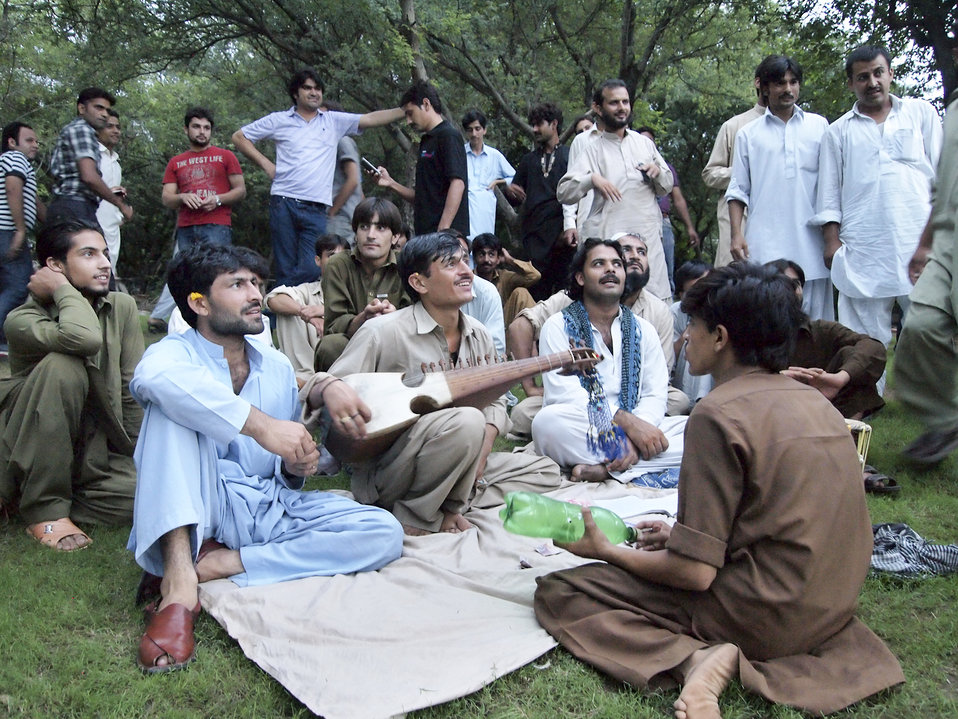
Islamabad, September 24, 2012 – Photo by Alamgir Khan, taken at Lake View Park, Rawal Lake, Islamabad - Shot from a USAID-organized 'photo camp' for 16 young aspiring journalists from FATA.